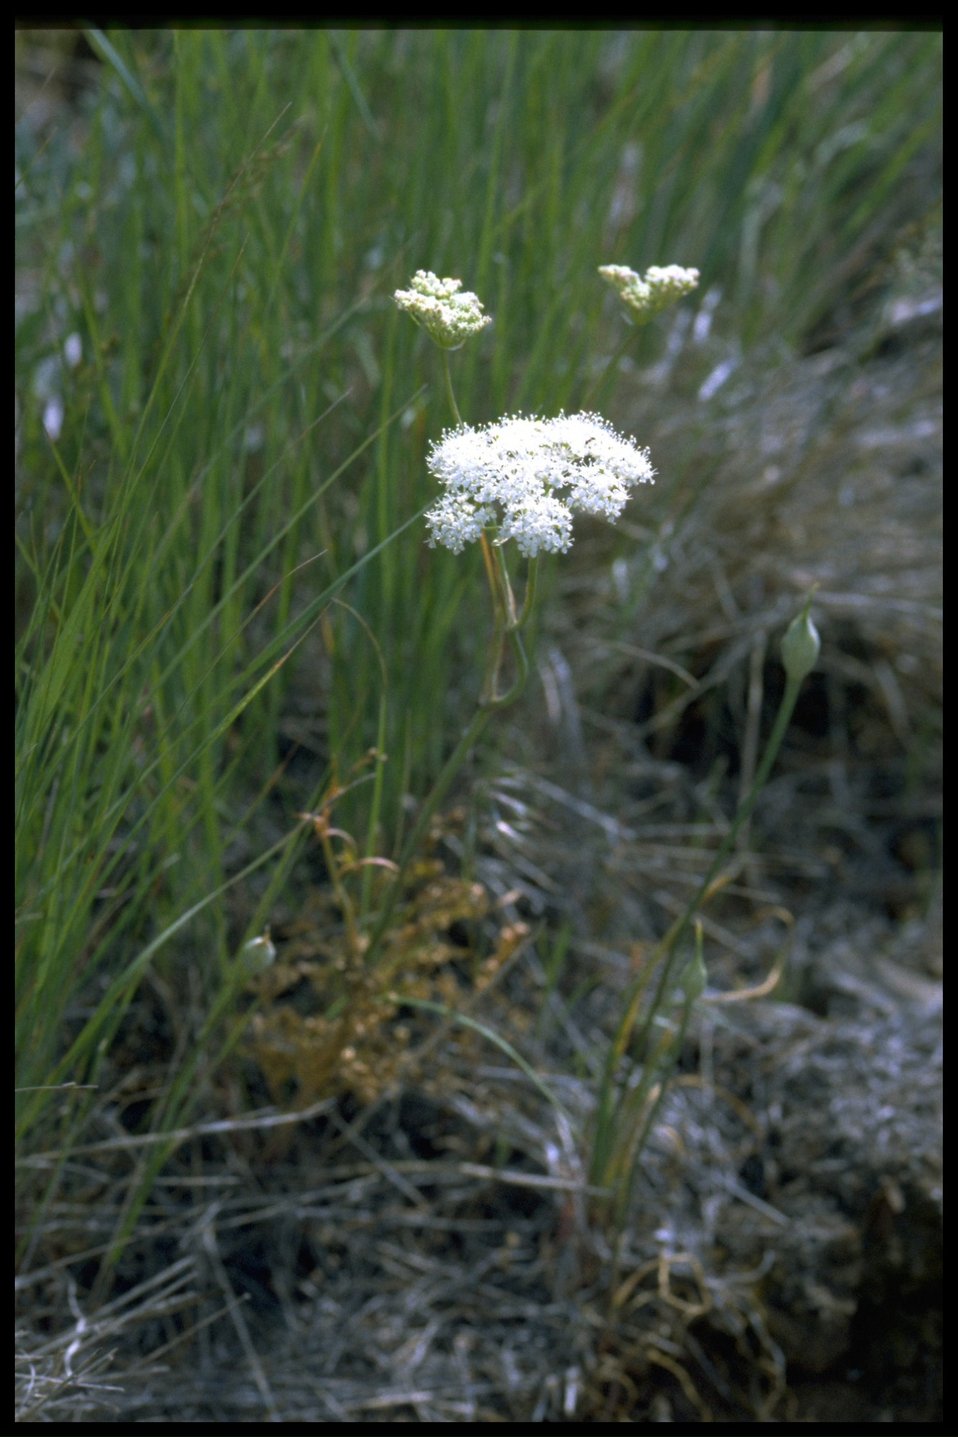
Medium shot of Yampah wildflowers.